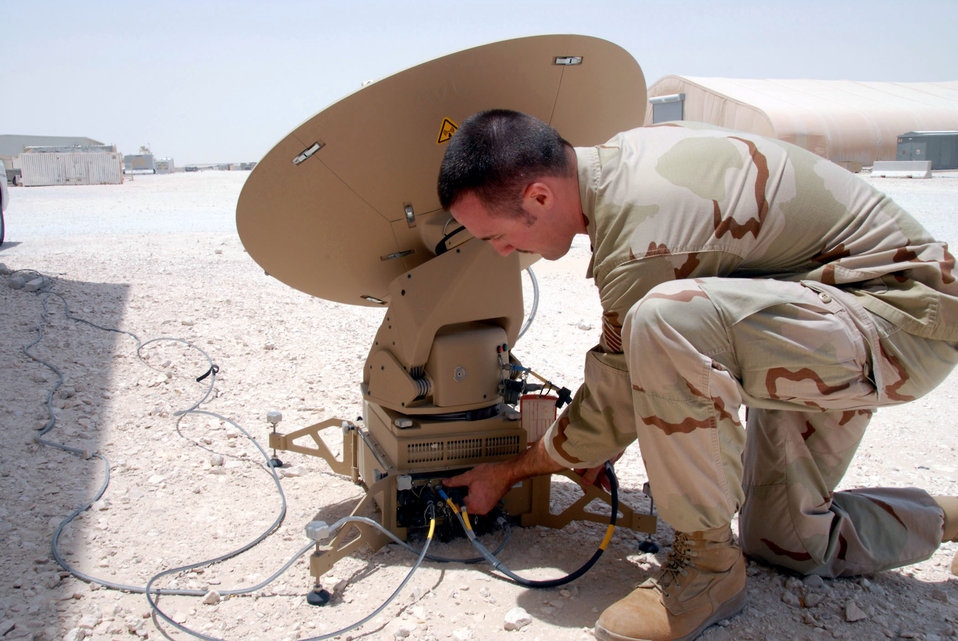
New communications platform helps EOD save lives, time

Staff Sgt. Jonathan Salisbury checks the input and output cables from a very small aperture terminal's satellite dish July 11 in Southwest Asia. Sergeant Salisbury is assigned to the 379th Expeditionary Civil Engineer Squadron explosive ordnance disposal unit.